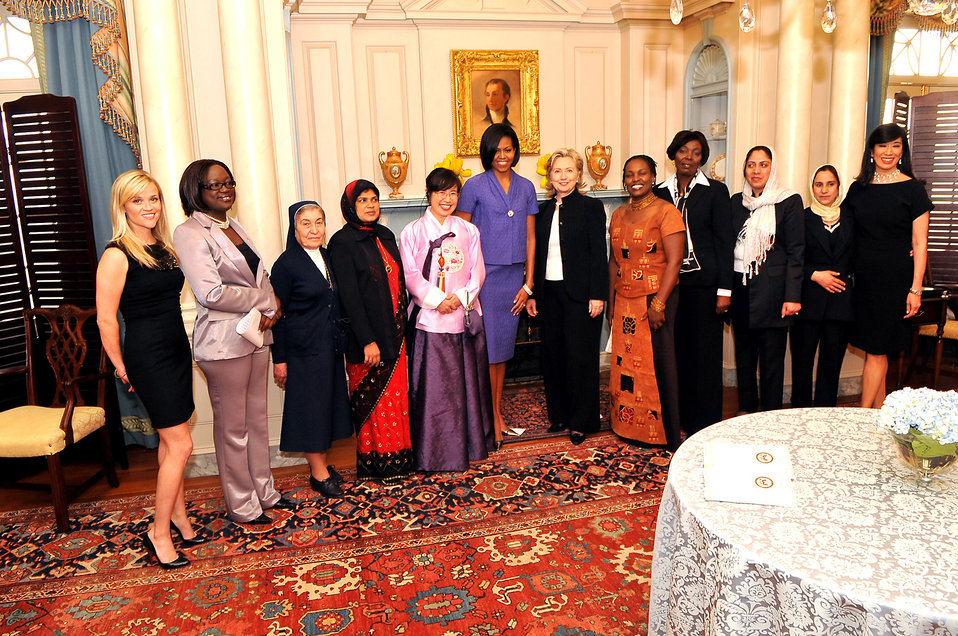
Secretary Clinton and First Lady Michelle Obama With 2010 IWOC Honorees and Guests

U.S. Secretary of State Hillary Clinton and First Lady Michelle Obama stands with (L to R): Reese Witherspoon, the Women of Courage honorees, and Andrea Jung at the 2010 International Women of Courage Awards at the U.S. Department of State, Washington, D.C. March 10, 2010.